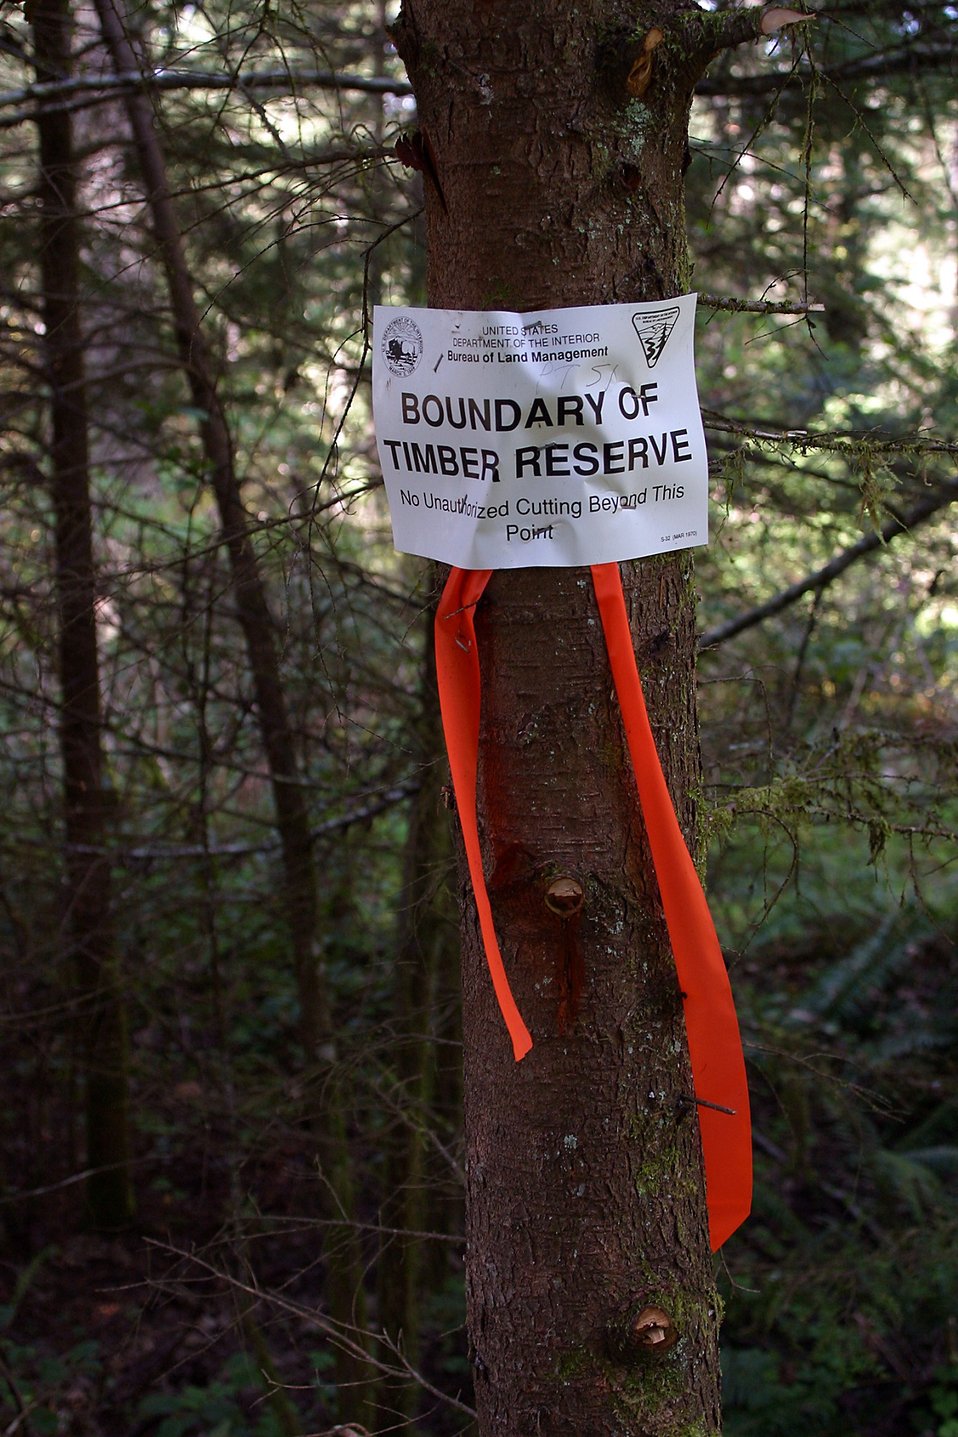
Bounddary marker on BLM Public Land near the Santiam River.